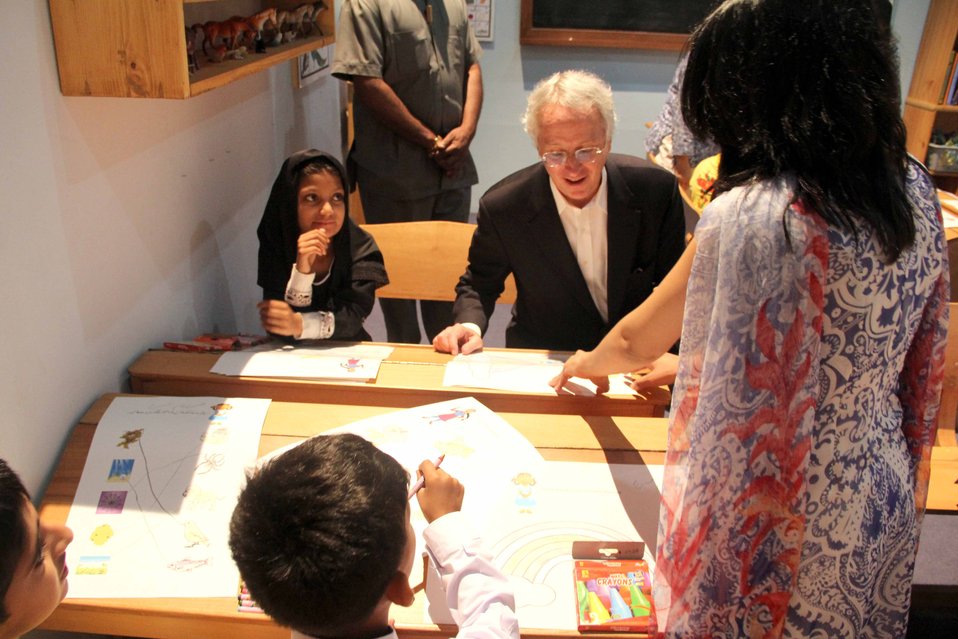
U.S. Ambassador’s Visit to Sim Sim Hamara Highlights U.S. Commitment to Improved Children’s Education in Pakistan at Lahore on 28 April, 2012

Mr. Cameron Munter sitting with the childrens